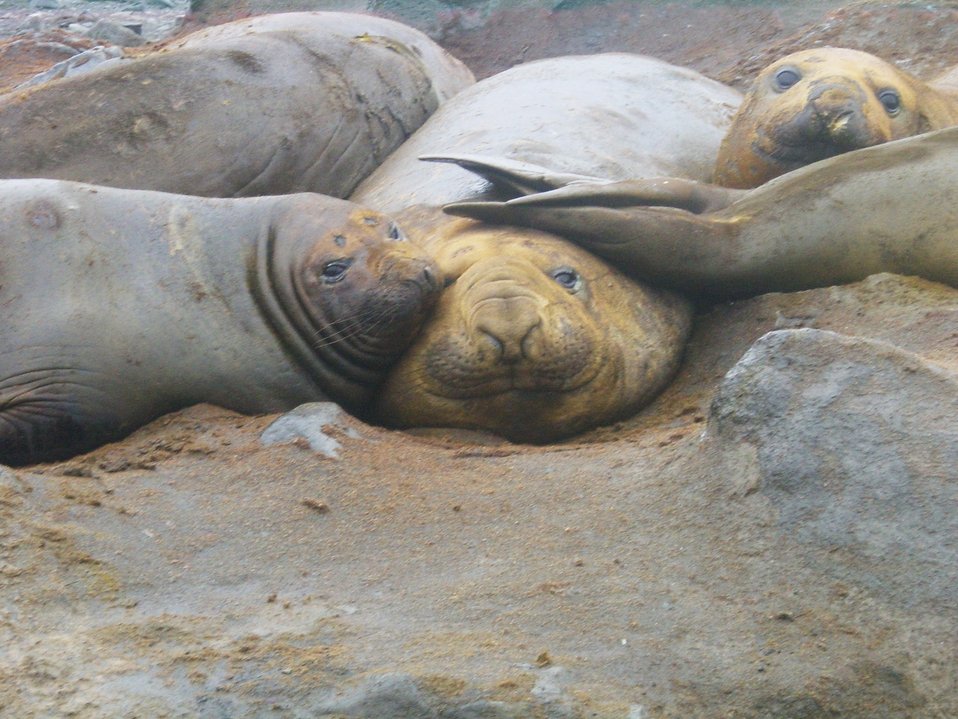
Elephant seals on the beach